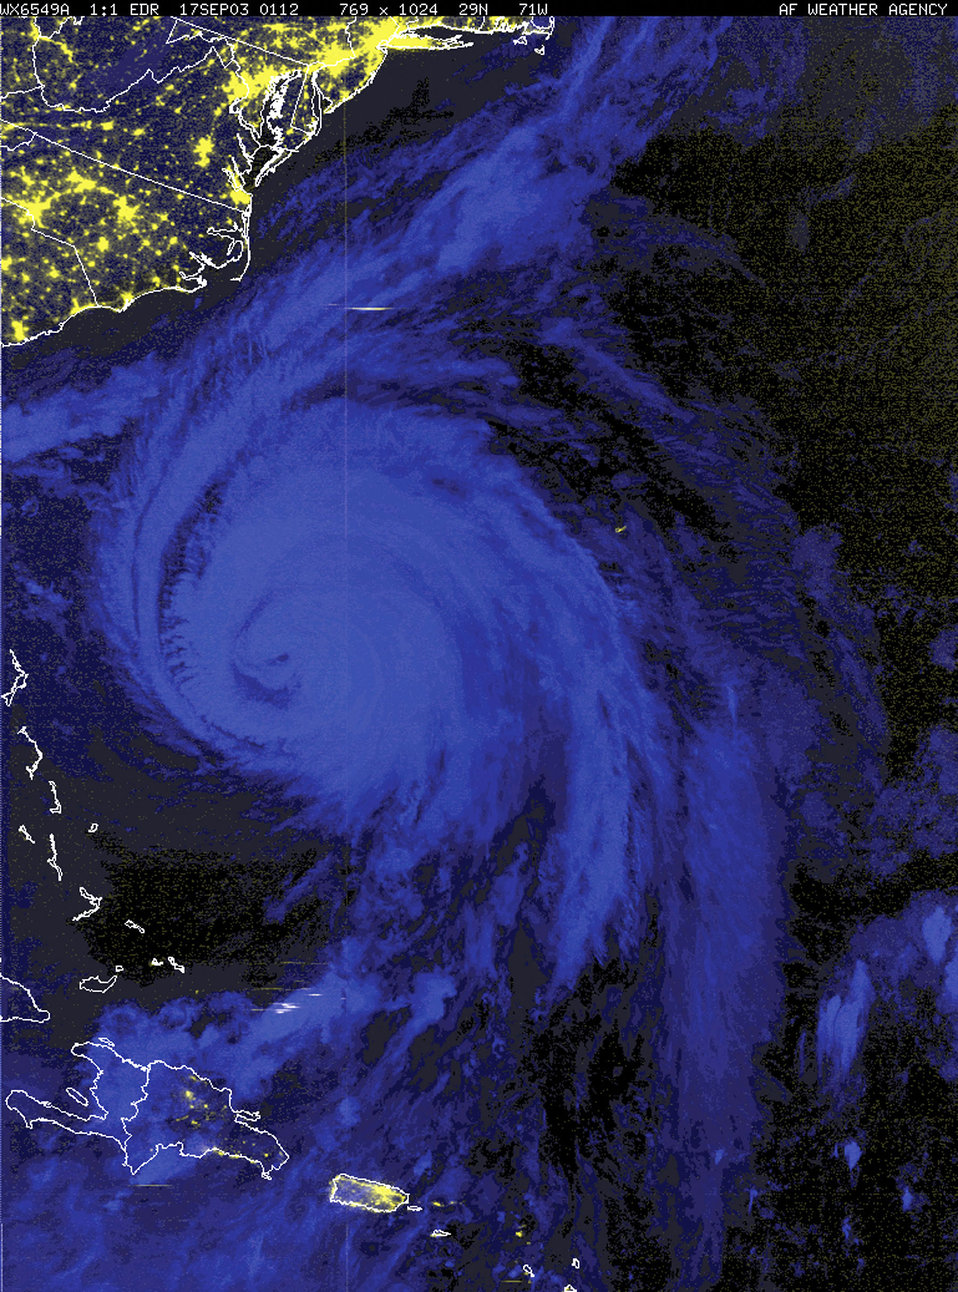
Isabel hits East Coast

SATELLITE IMAGE -- This Sept. 17 composite of Hurricane Isabel uses two separate satellite images. The city lights of the East Coast were obtained using visible image capabilities and the hurricane was captured using infrared capabilities.